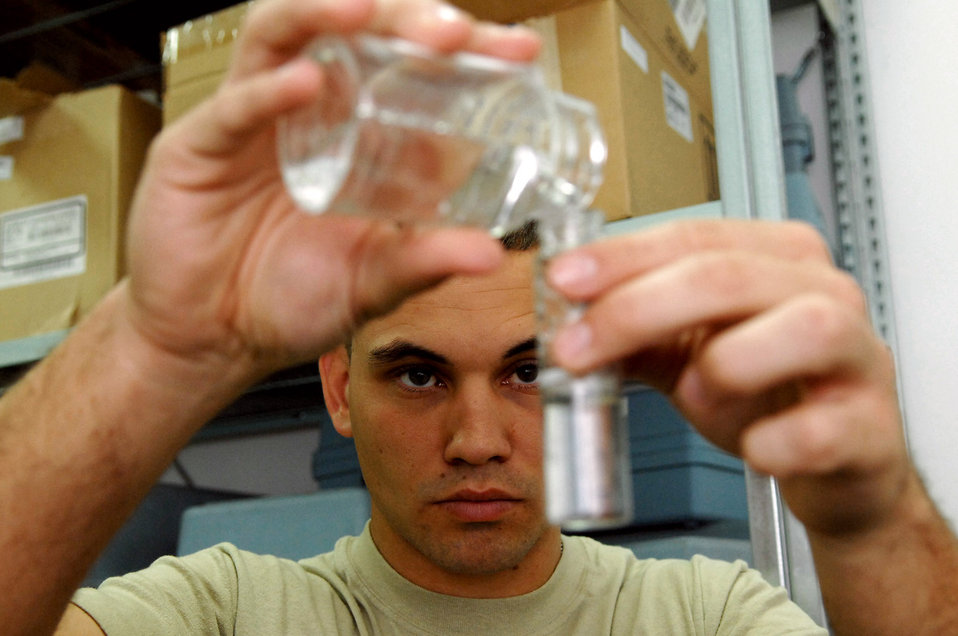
Team effort keeps Balad water supply safe

Staff Sgt. Gary Messer transfers a sample of tap water to a tube before performing tests to confirm that the water is free from bacteria March 13 at Balad Air Base, Iraq. Sergeant Messer, a 332nd Expeditionary Aerospace Medical Squadron bioenvironmental engineer, is deployed from Lackland Air Force Base, Texas.